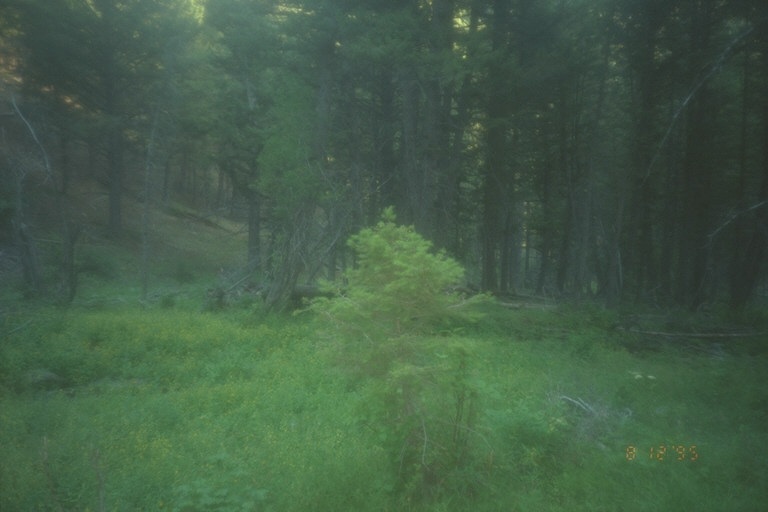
Riparian area Public Lands Salmon Field Office UCSC Upper Columbia Salmon Clearwater District